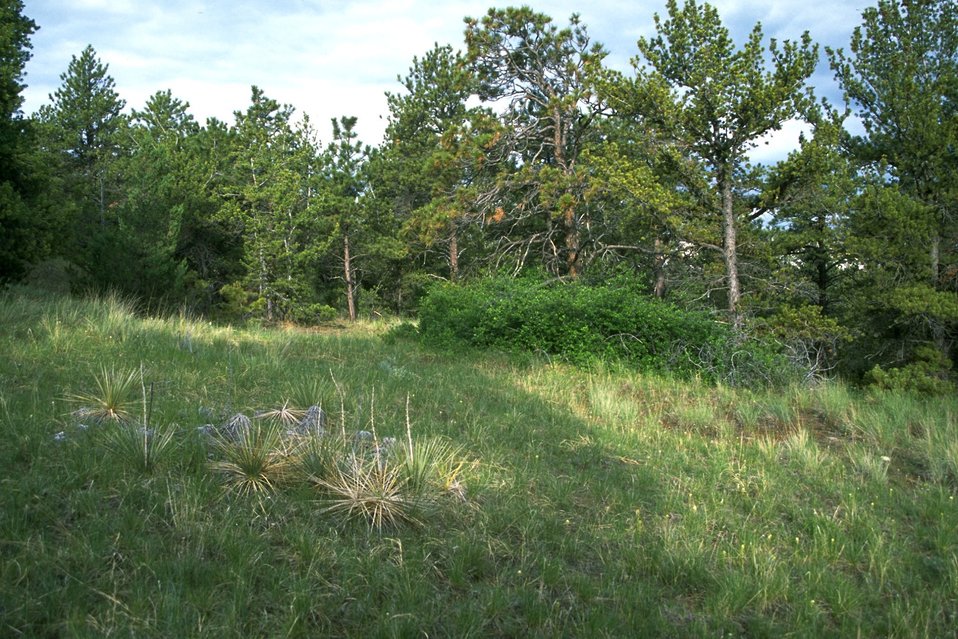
Vegetation in the Four Dances Natural Area